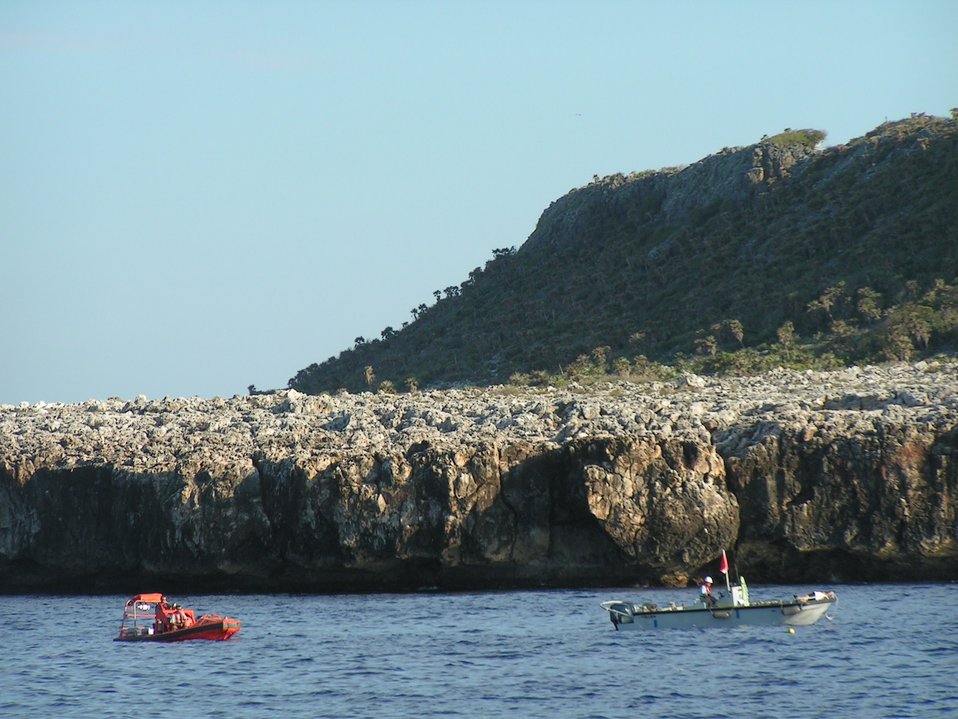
The coxswains of two of the small boats from NANCY FOSTER patiently and cautiously tend to the divers below the surface. Operations off the NOAA Ship NANCY FOSTER.